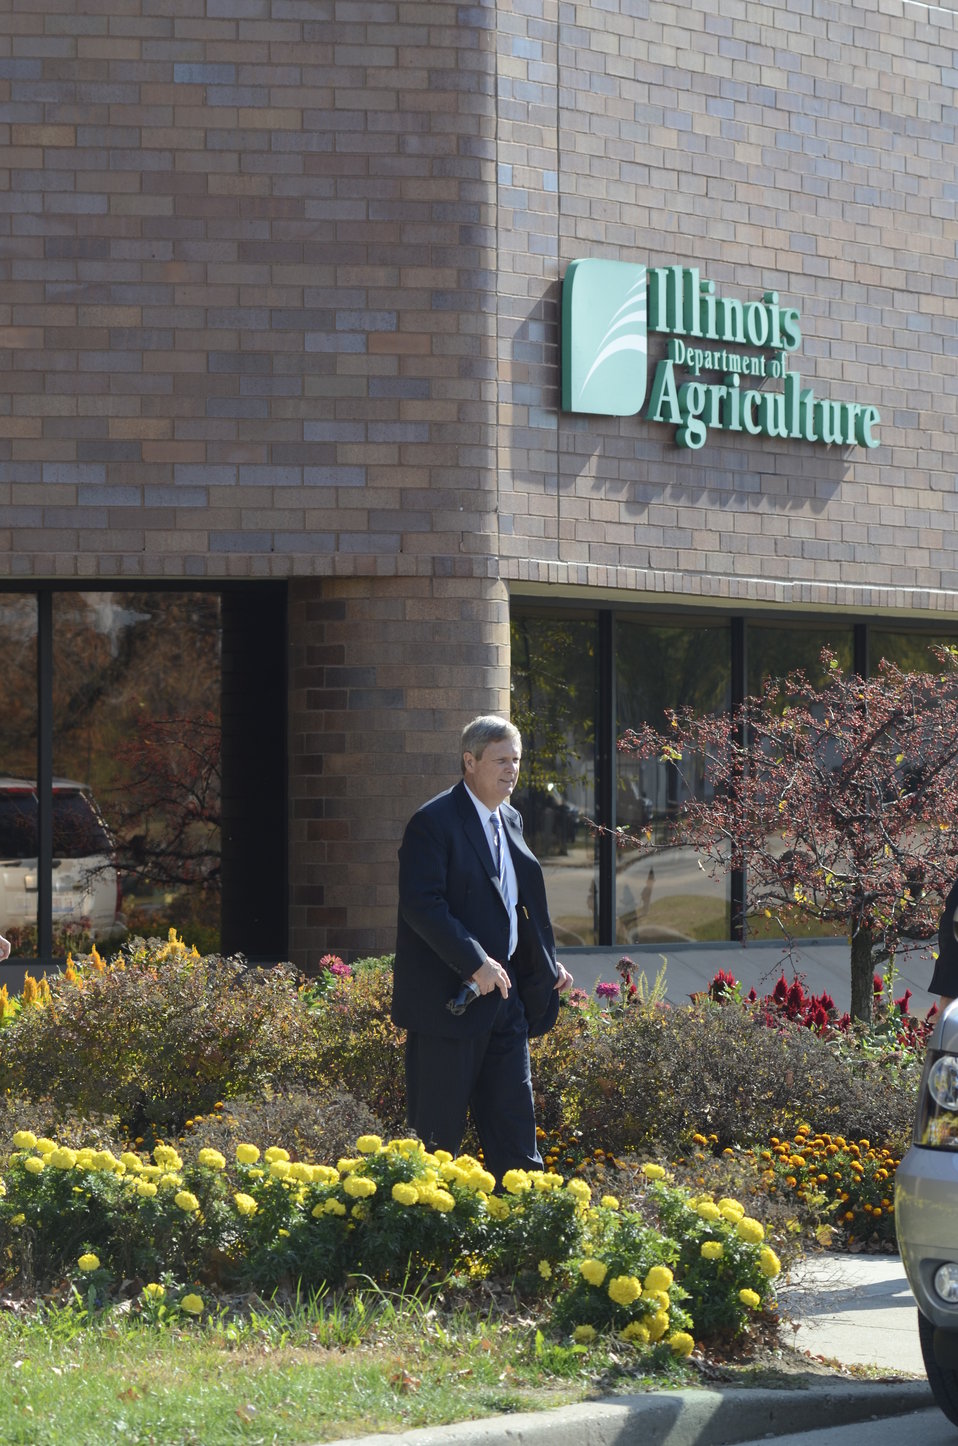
U.S. Department of Agriculture (USDA) Secretary Tom Vilsack departs the National Agricultural Statistics Service office in Springfield, IL, after visiting the employees to talk with them about current and future cutbacks across the department, on Wednesday, November 2, 2011.